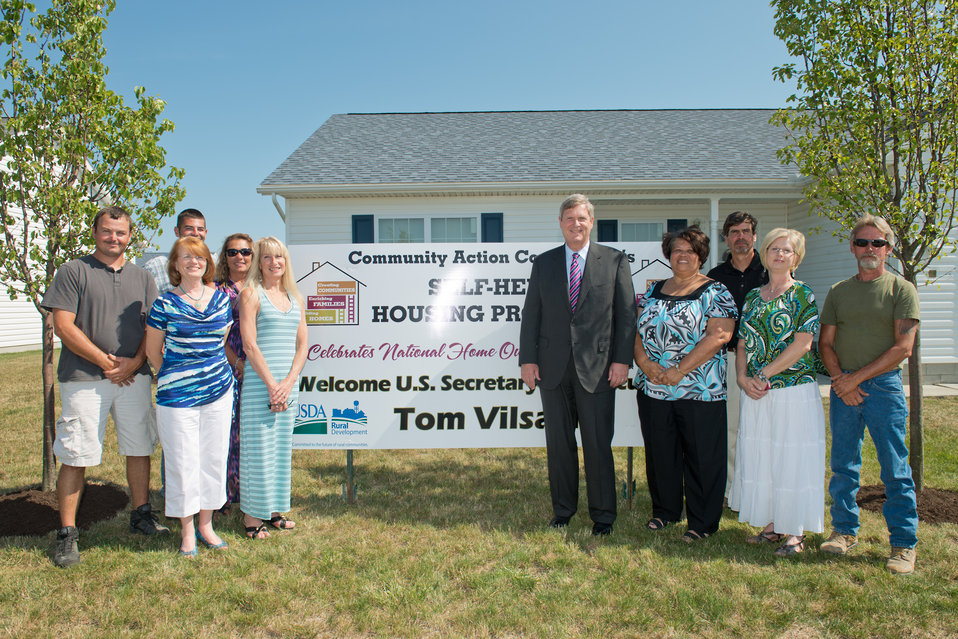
Agriculture Secretary Tom Vilsack stands with Community Action team members of Fayette County (CAC) during a commemoration of National Homeownership Month at the Arbor Village subdivision in Fayette County, OH on Thursday, June 28, 2012. (L to-R Construction Supervisor Brad Willett, Washington Supply team member Jared Chester, CAC Fiscal Officer Denise Pontius, CAC Housing Director Patty Griffiths, CAC Executive Director Bambi Baughn, Construction Manager Bill Davis, Group Coordinator and Secretary Kathy Mickey, Loan Packager Tina Dahmer, and Construction Supervisor Frankie Dunn)